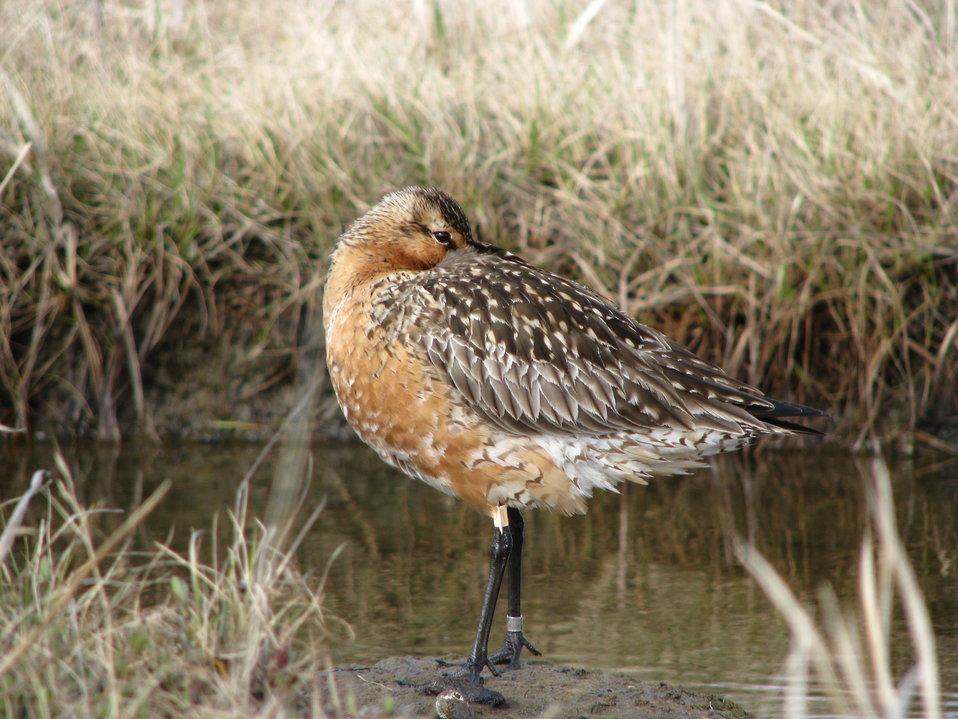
Banded and Flagged Bar-tailed Godwit

Yukon Delta NWR
This was a great find!! This guy was banded and had a flag!!